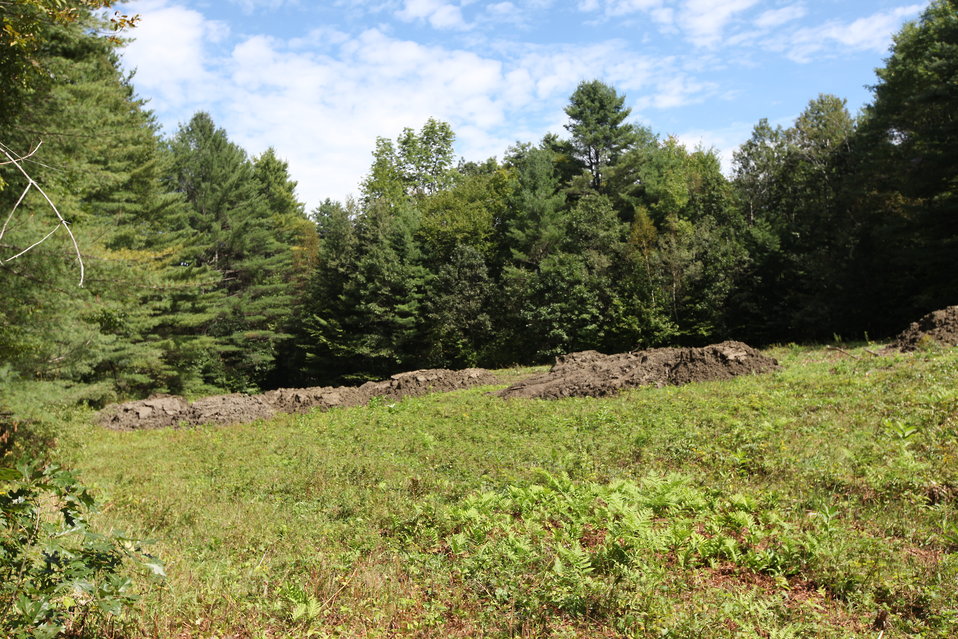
Storm damage relief at White River NFH

Clean-up of mud and silt deposited during the flood.